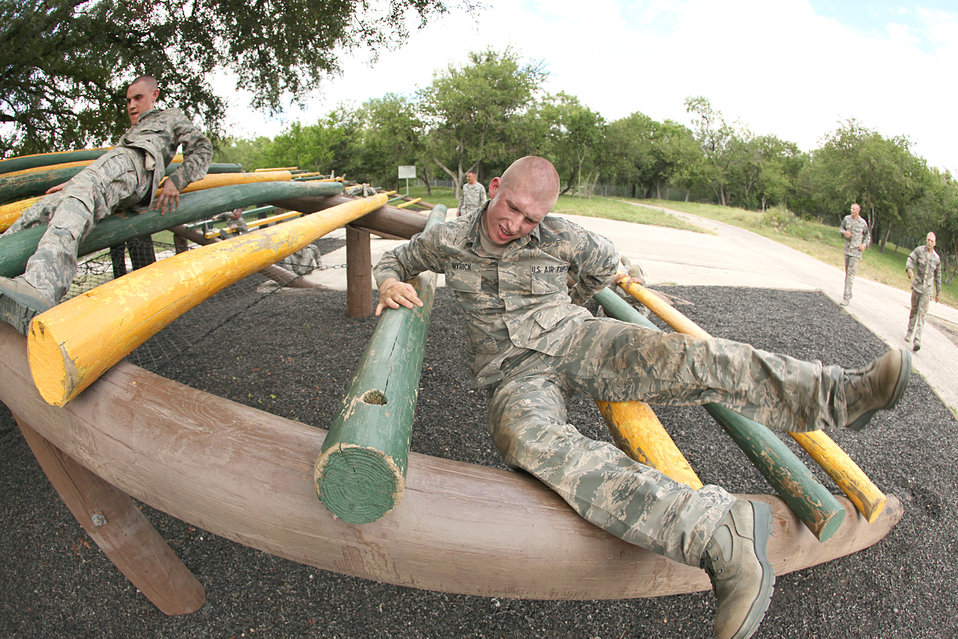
Trainees take on confidence course

Trainees from Basic Military Training navigate an obstacle June 30, 2010, at Lackland Air Force Base, Texas. In addition to fitness training and military studies, trainees are taught fundamental Air Force information including core values, customs and courtesies, and basic policies and procedures.